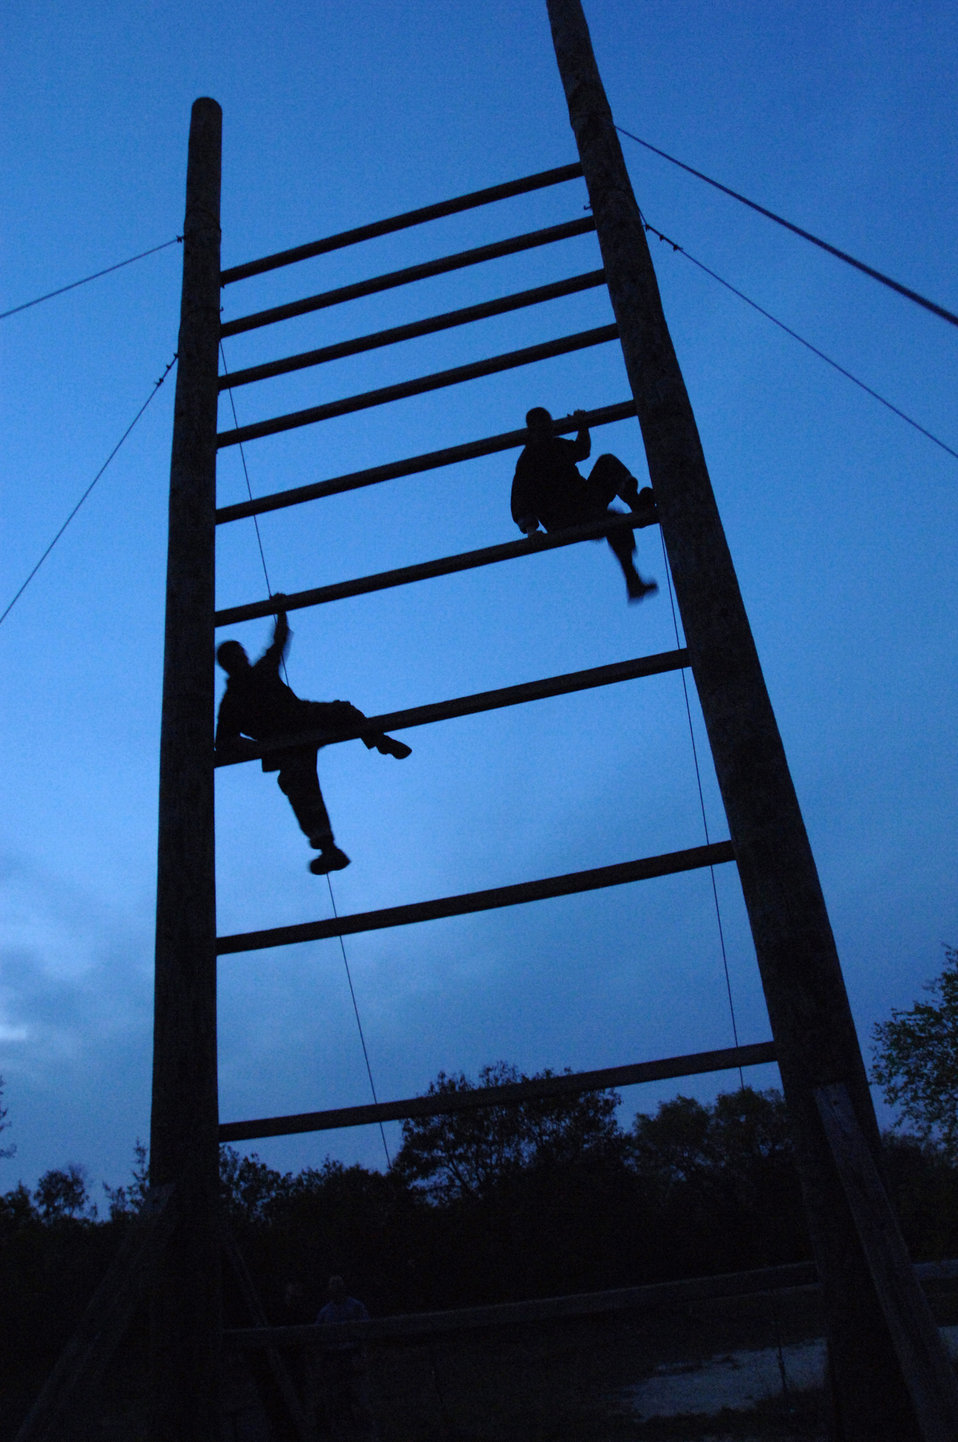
'That others may live'

Two trainees run through an obstacle course during pararescue indoctrination training at Lackland Air Force Base, Texas, on Thursday, April 6, 2006. The 10-week indoctrination training is the first hurdle of intense physical and mental training for pararescue hopefuls. It prepares them for the 12 to 15 months of extreme training they must pass to become Air Force pararescue members.